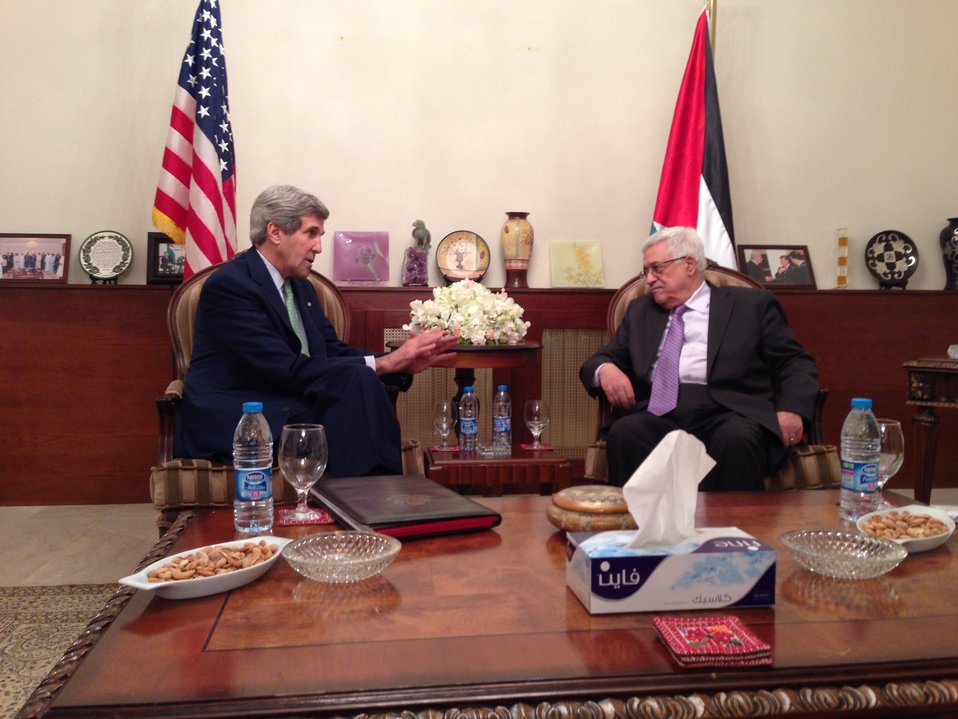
Secretary Kerry and Palestinian President Abbas Meet in Amman

U.S. Secretary of State John Kerry visits Palestinian President Mahmoud Abbas at his home in Amman, Jordan on March 23, 2013.